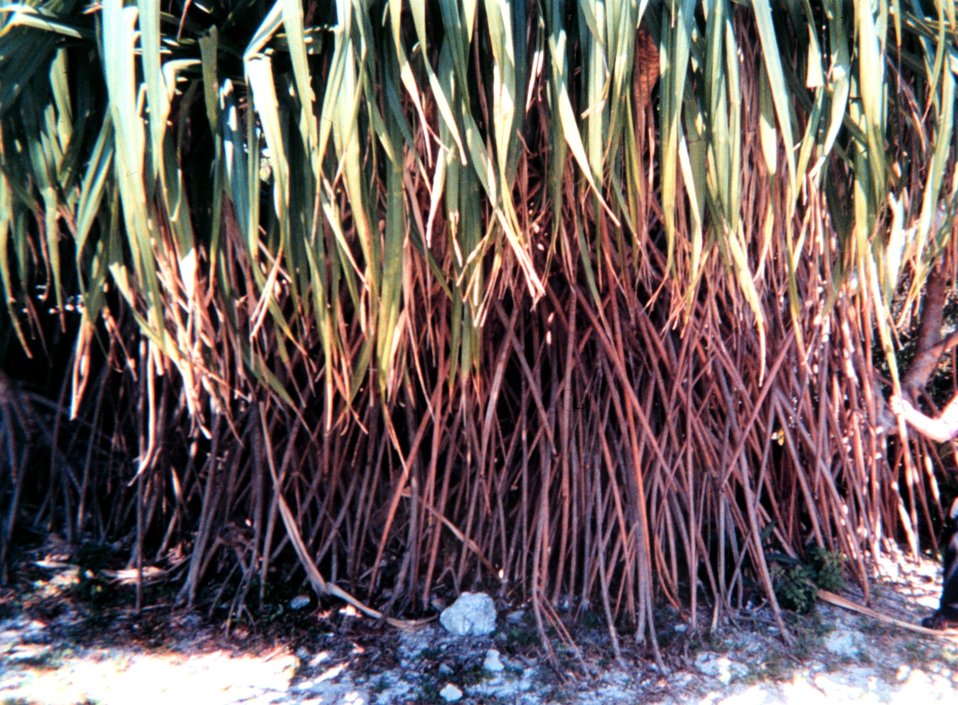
Spectacular vines at the Key West Garden Club gardens at the West Martello, a part of the Civil War era defenses of Key West on the south side of the island. Note the adult arm on the right side of the photo for scale of vegetation.